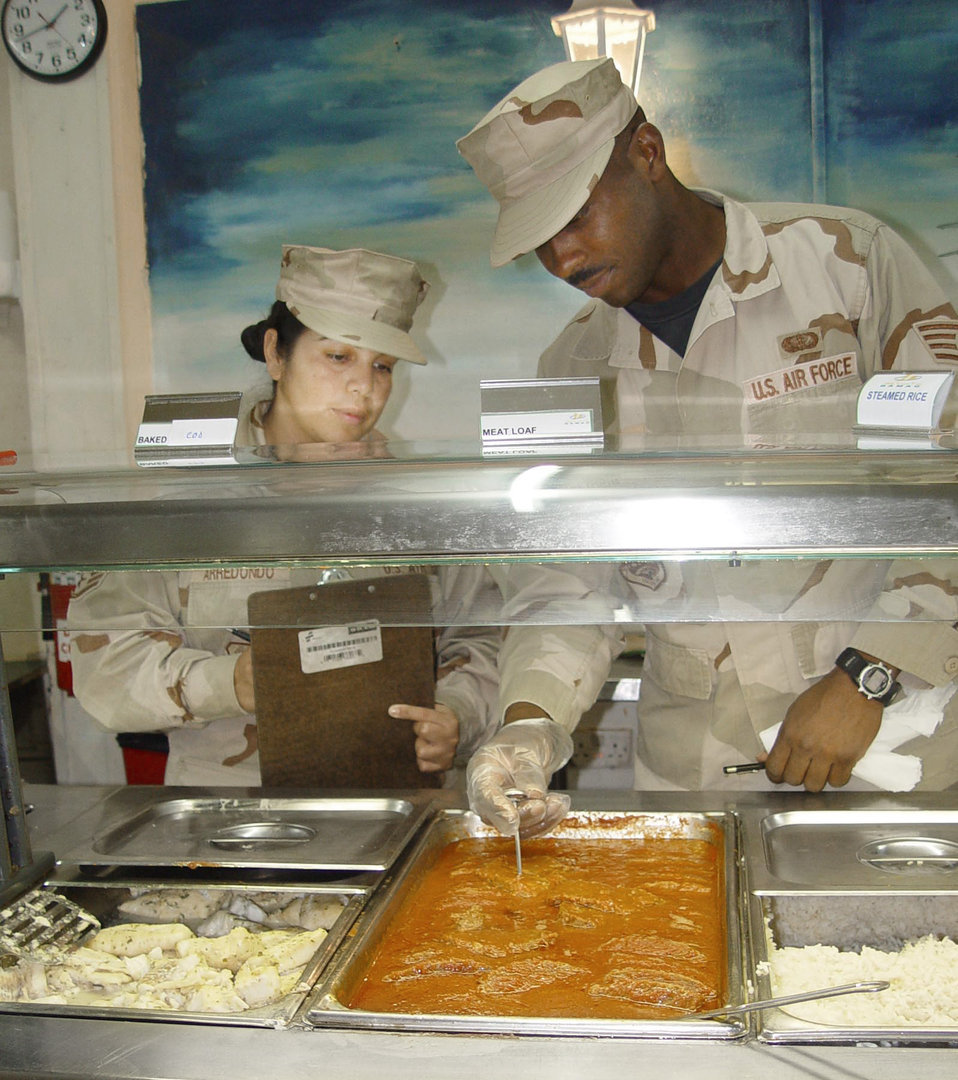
Deployed services

SOUTHWEST ASIA -- Staff Sgts. Wardell Herron and Gricelda Arredondo check food temperature levels here. Sergeants Herron and Arredondo work every day to ensure the quality and safety of served food. The Airmen are assigned to the 380 th Expeditionary Services Squadron.